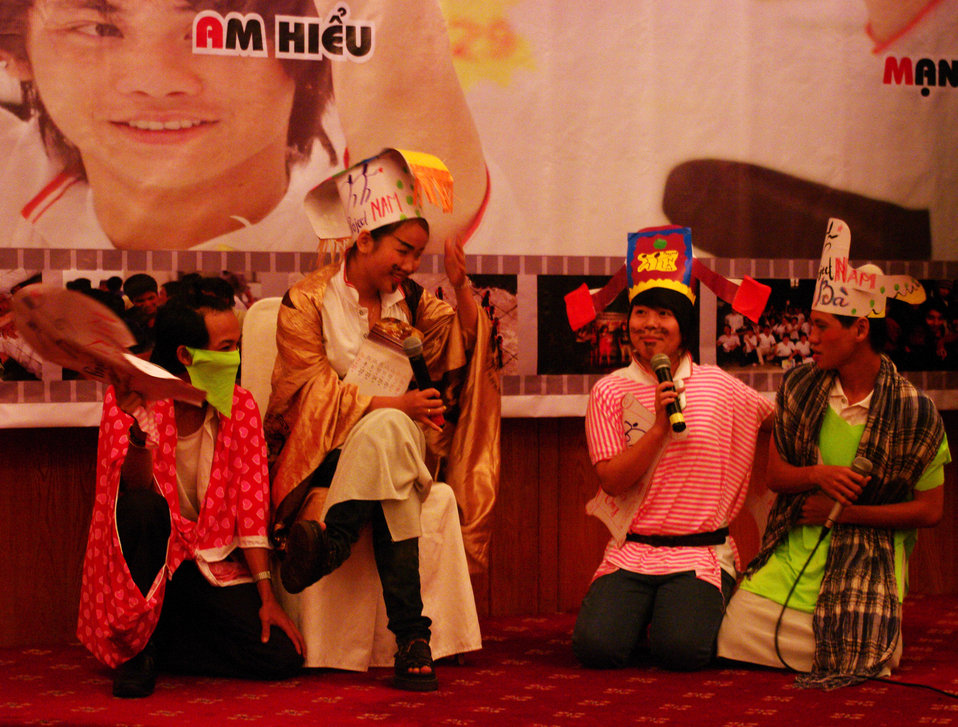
USAID Supports HIV Awareness among Street Youth and Young Men

Trainers and peer educators tell their stories on November 29, 2011, in Hanoi, Vietnam